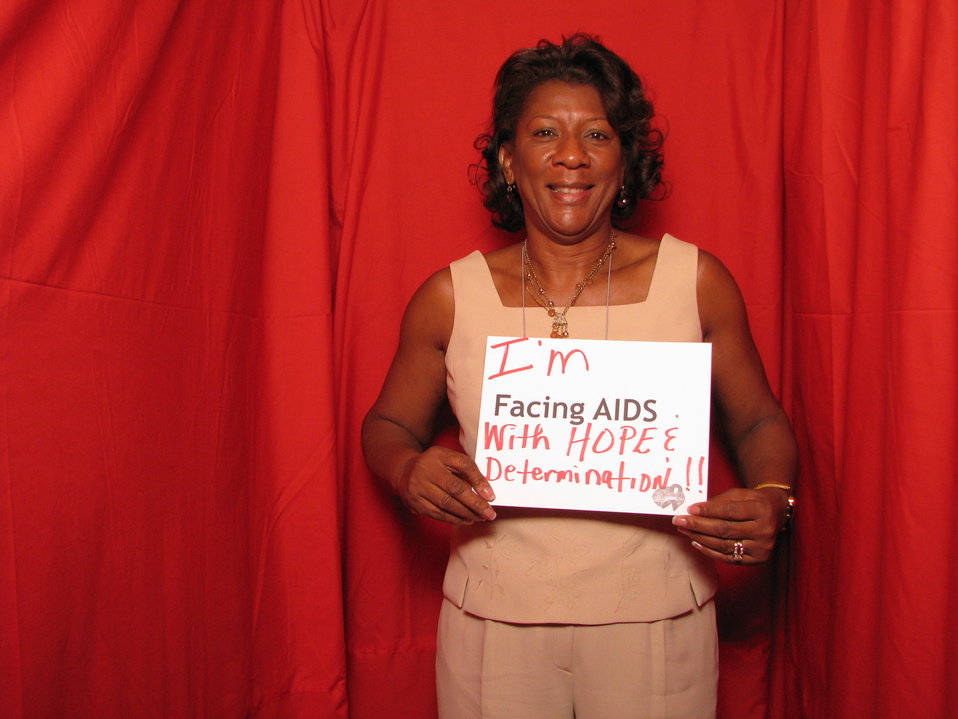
I'm FACING AIDS with HOPE and Determination!!!

From the AIDS.gov photo booth at the U.S. Conference on AIDS, September 2010 (Orlando, FL).